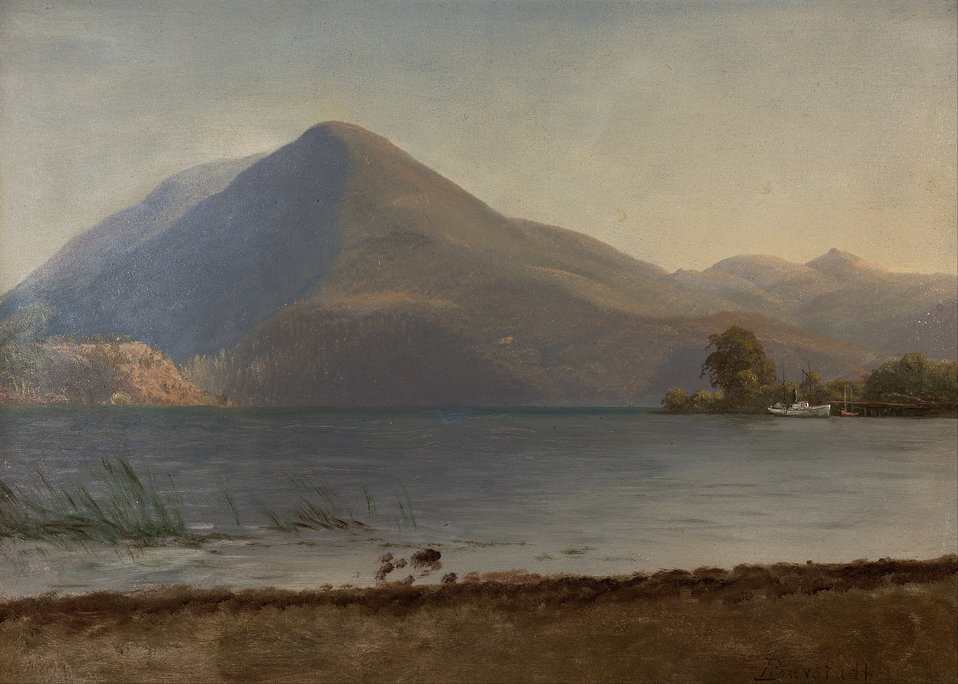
Albert Bierstadt - On the Hudson - Google Art Project